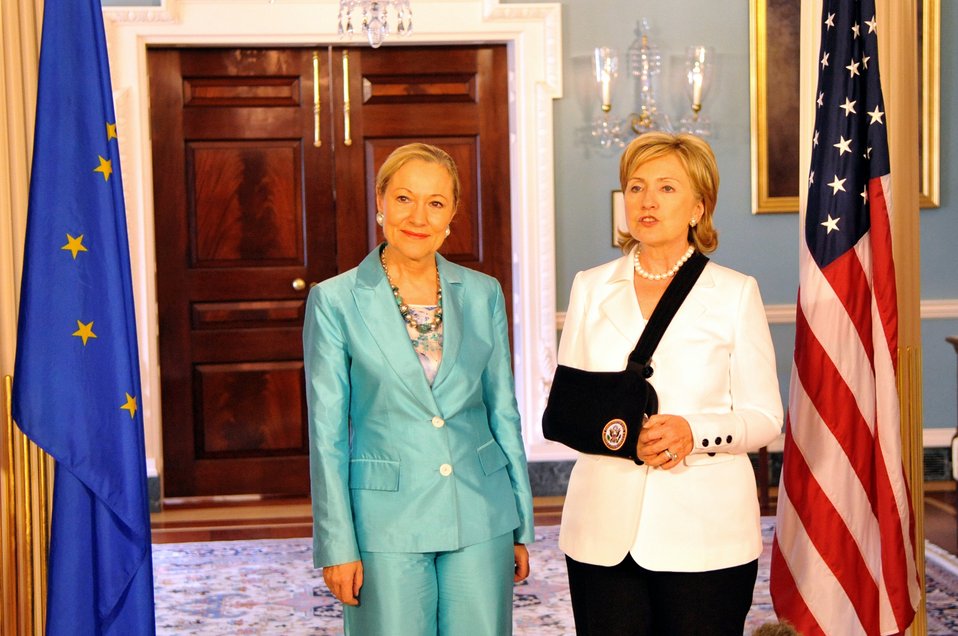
Secretary Clinton Meets With European Commissioner for External Relations and European Neighborhood Policy

U.S. Secretary of State Hillary Rodham Clinton meets with H.E. Dr. Benita Ferrero-Waldner, European Commissioner for External Relations and European Neighborhood Policy at the U.S. Department of State in Washington, DC July 10, 2009.